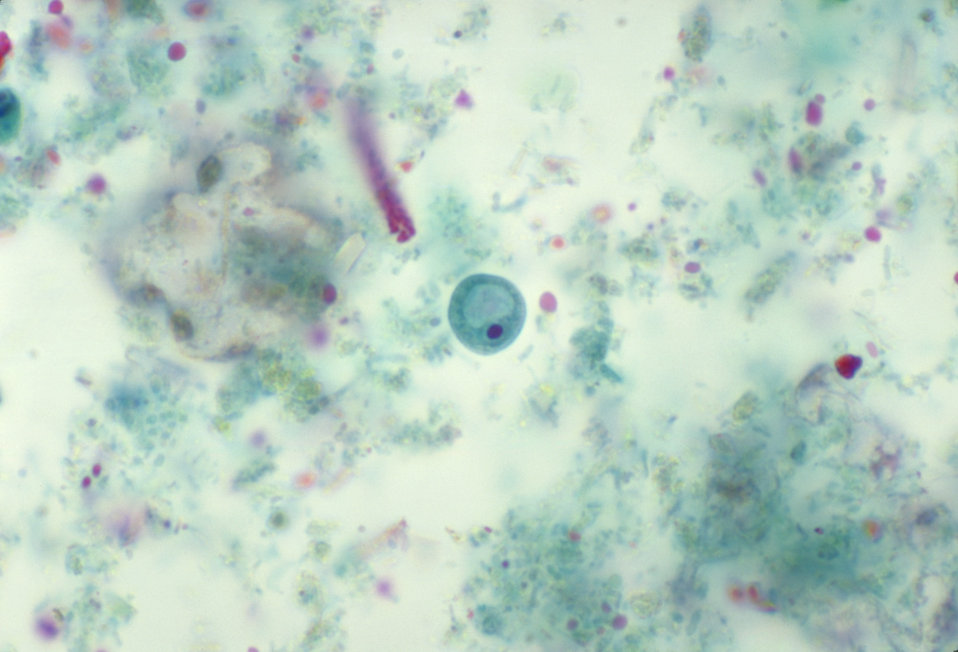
This photomicrograph depicts the cyst of an Iodamoeba b�ii parasitic amoeba.